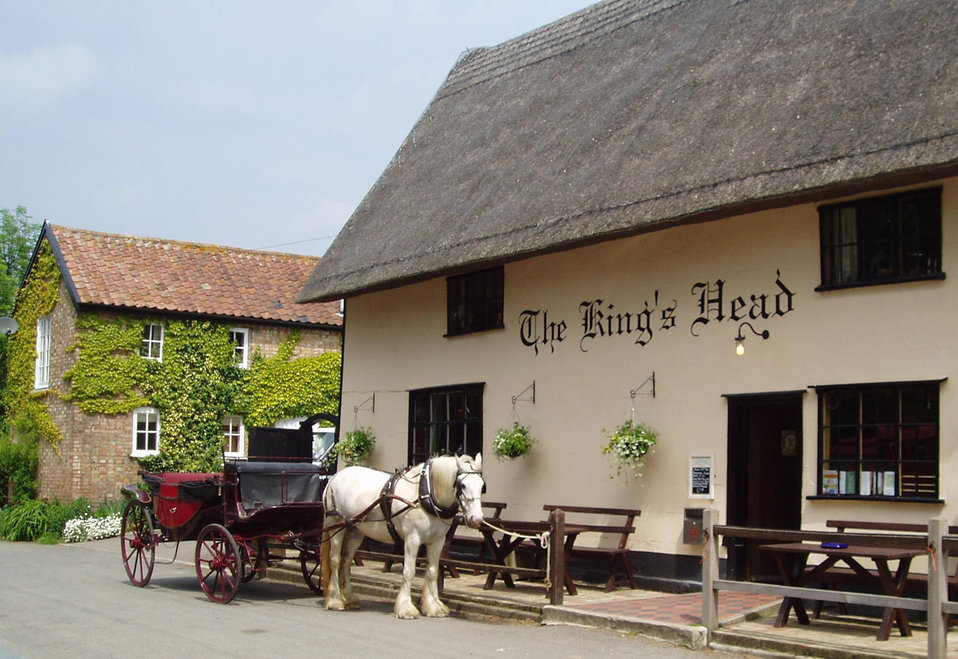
Horse and trap outside pub in laxfield, suffolk.